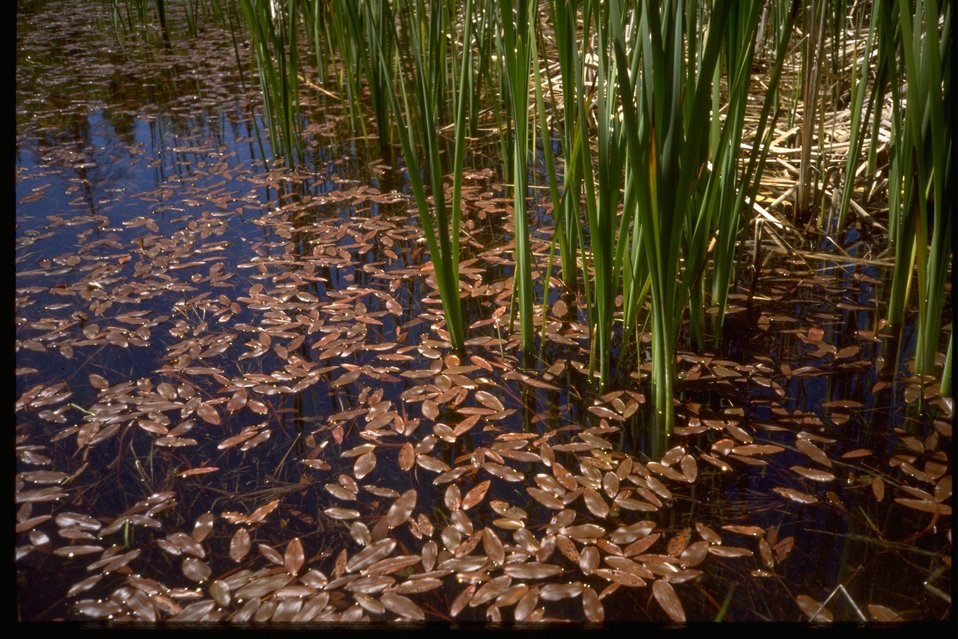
Pond near Flounce Rock.